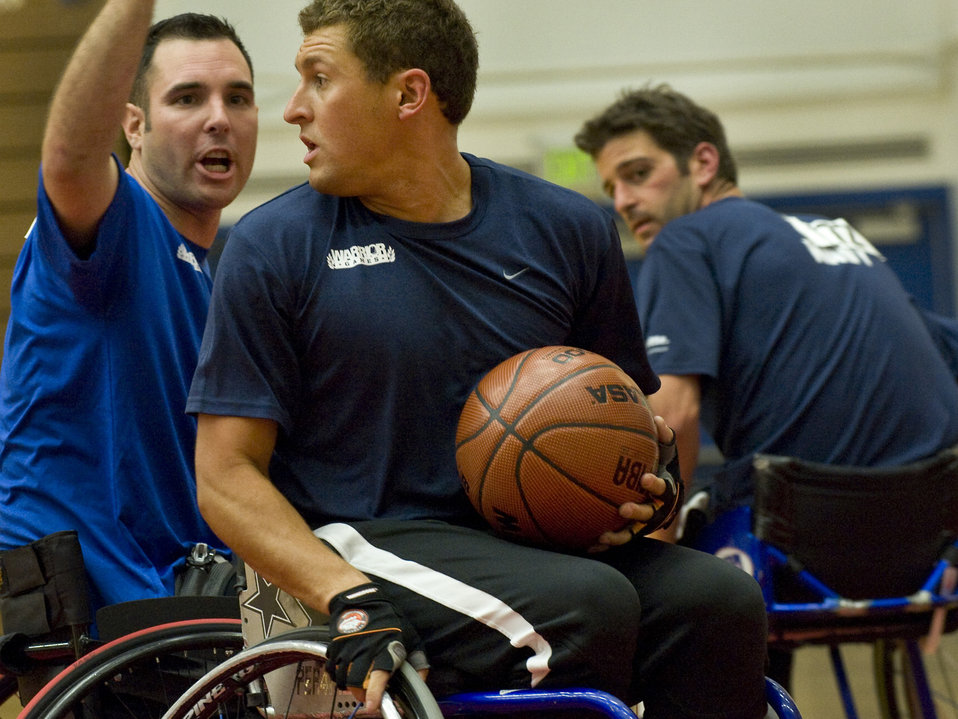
AF Basketball

A Navy basketball player looks for an open teammate during the Warrior Games bronze medal match against the Air Force May 12, 2010 at the Olympic Training Center, Colorado Springs. The Air Force went on to win the game 13-10. The Warrior Games competition began May 10 and finishes on May 14, 2010 at the U.S. Olympic Training Center in Colorado Springs.